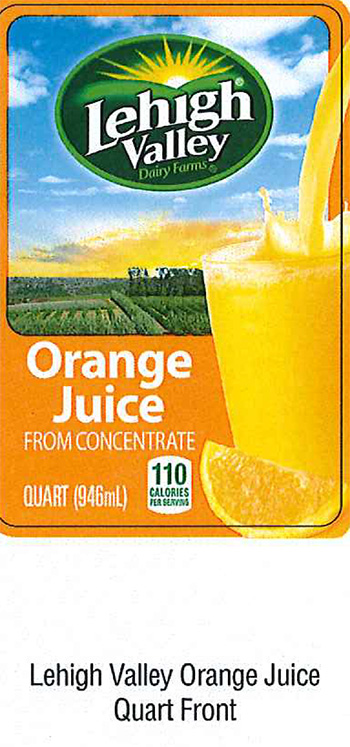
RECALLED – Orange Juice

March 3, 2014 – Product Recall – Lehigh Valley Dairy Conducts Voluntary Recall of Lehigh Valley, Swiss Premium, and Price Chopper Brand Orange Juice Because It May Contain Undeclared Allergen (Milk).